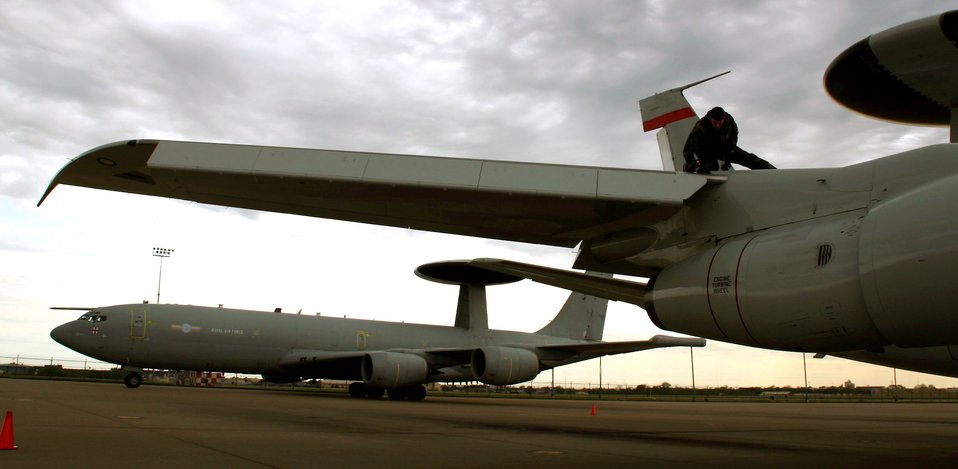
E-3D taxis in

An Airman conducts post-flight inspections on an E-3B/C Sentry aircraft as its cousin from across the Atlantic - the British E-3D Sentry - taxis to its parking space. Members of the No. 8 Squadron from Royal Air Force Waddington, United Kingdom, conducted a liaison visit to the 552nd Air Control Wing at Tinker Air Force Base, Okla., from April 10-17 to open the doors for future mission training and partnership.